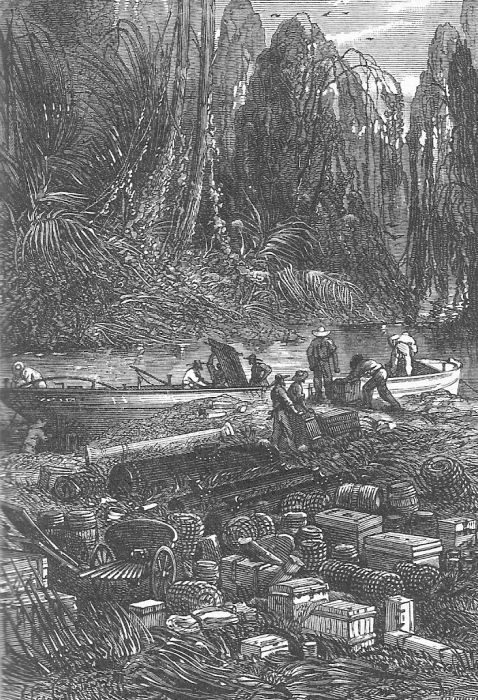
An illustration from Jules Verne's novel 'The Adventures of Three Englishmen and Three Russians in South Africa' (1870) drawn by Jules Férat. Polski: Ilustracja powieści Juliusza Verne'a 'Przygody trzech Rosjan i trzech Anglików w południowej Afryce' (1870) autorstwa Julesa Férata. Français : Jules Verne: 'Aventures de trois russes et de trois anglais dans l’Afrique australe' (1870), dessins par Jules Férat.